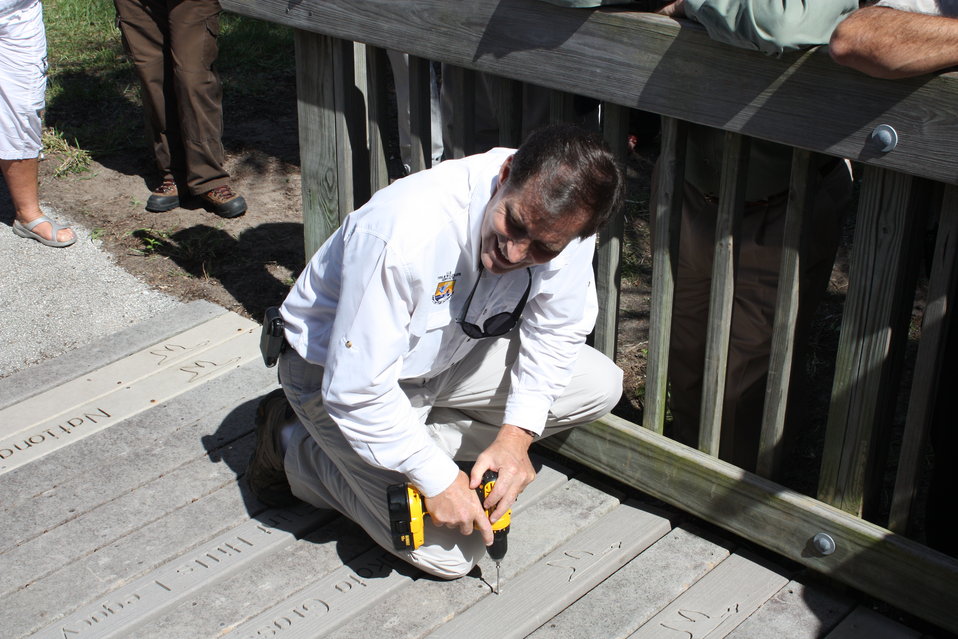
Director Dan Ashe places plank

U.S. Fish and Wildlife Service Director Dan Ashe places planks to commemorate one of the four new refuges on the Centennial Trail Boardwalk at Pelican Island National Wildlife Refuge.